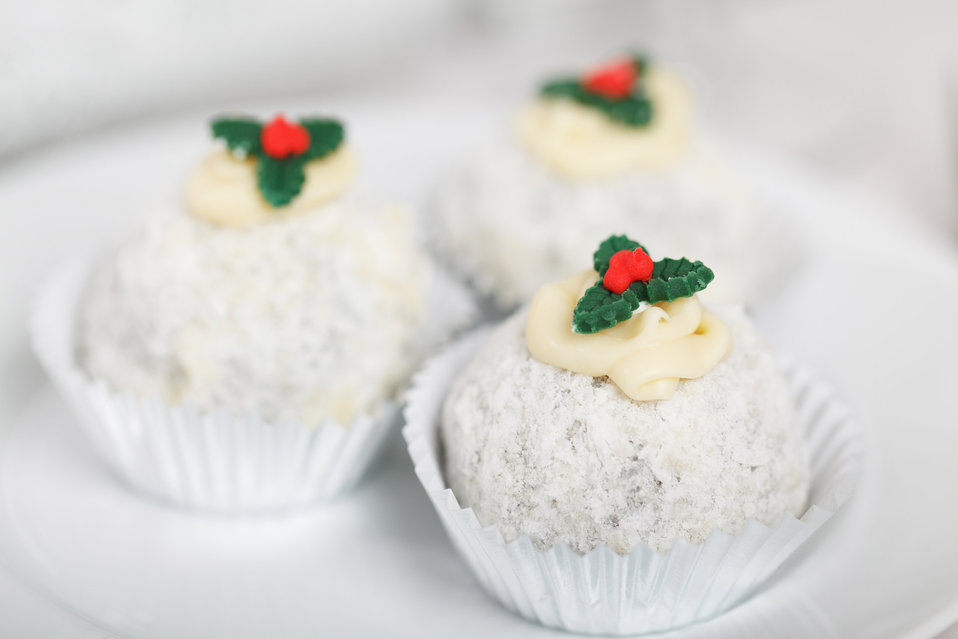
Christmas dessert with holly

Round christmas dessert with coconut and a holly on the top.